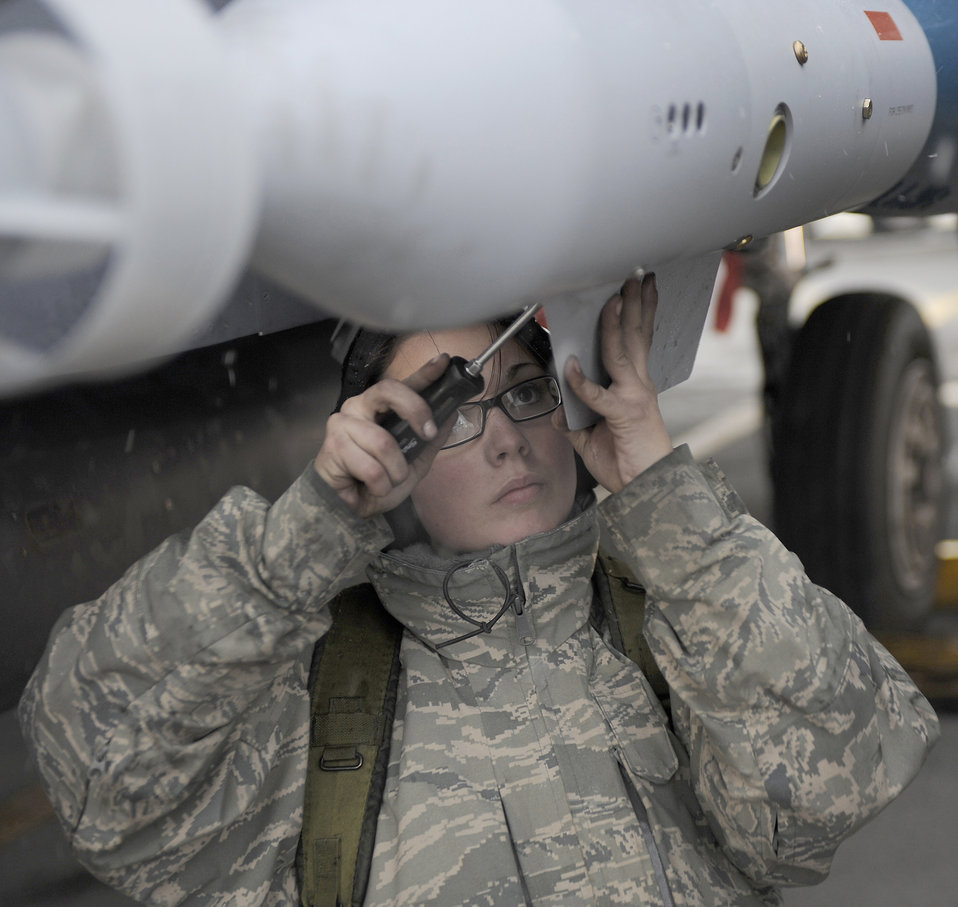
Easy does it

Airman 1st Class Alexandria Roope secures a fin on a missile during a phase I operational readiness exercise Nov. 22, 2010, at Mountain Home Air Force Base, Idaho.